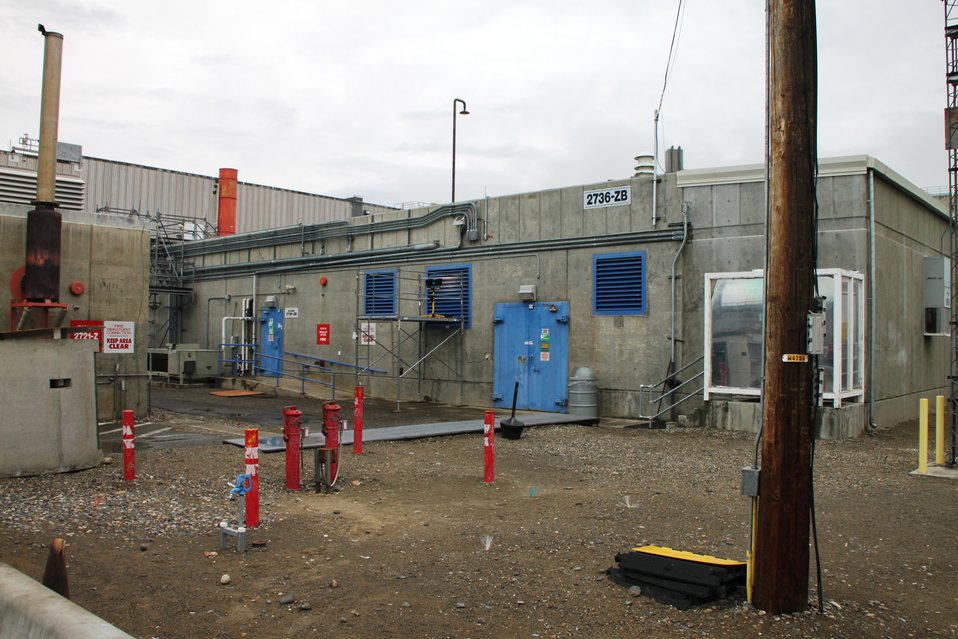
Workers Complete Demolition of Hanford’s Historic Plutonium Vaults

The Richland Operations Office and contractor CH2M HILL Plateau Remediation Company this month completed demolition of a large plutonium vault complex, formerly one of the highest security facilities at the Hanford site.

Built in 1971, the complex was the end of the road for the plutonium product fabricated at the plant. The vault held the top-secret stores of plutonium in metal canisters until they were shipped for weapons production.